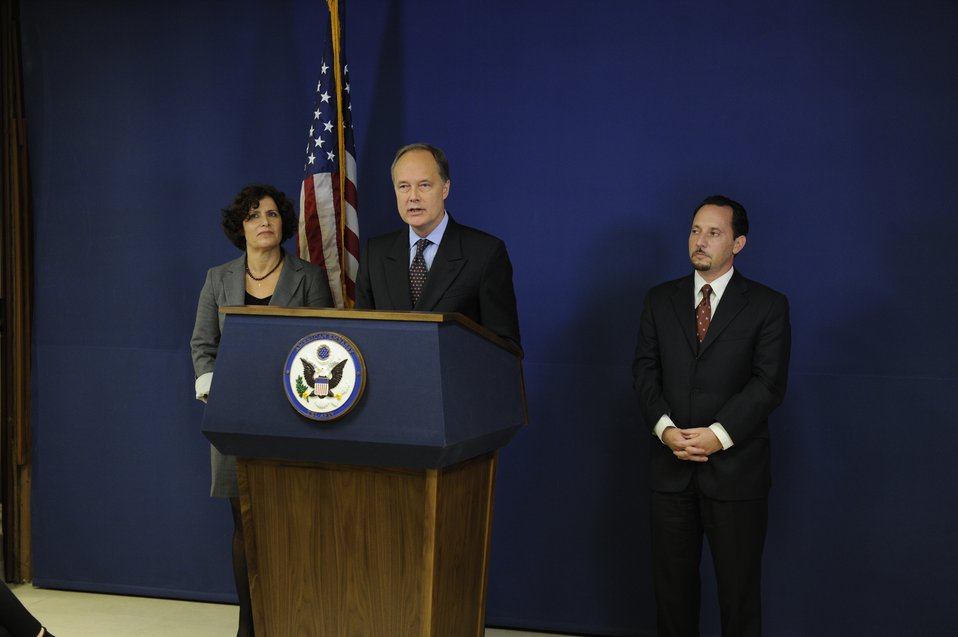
Ambassador Cunningham, Consul General Rubinstein, and CISCO Senior Manager Abzuk Celebrate the ACE Award in Jerusalem

U.S. Ambassador to Israel James Cunningham, U.S. Consul General to Israel Daniel Rubinstein, and Cisco Senior Manager Zika Abzuk, linked via digital video conference with the Secretary of State's Award for Corporate Excellent (ACE) event in Washington, D.C., celebrate the Award at a Jerusalem event in Israel, December 17, 2010.